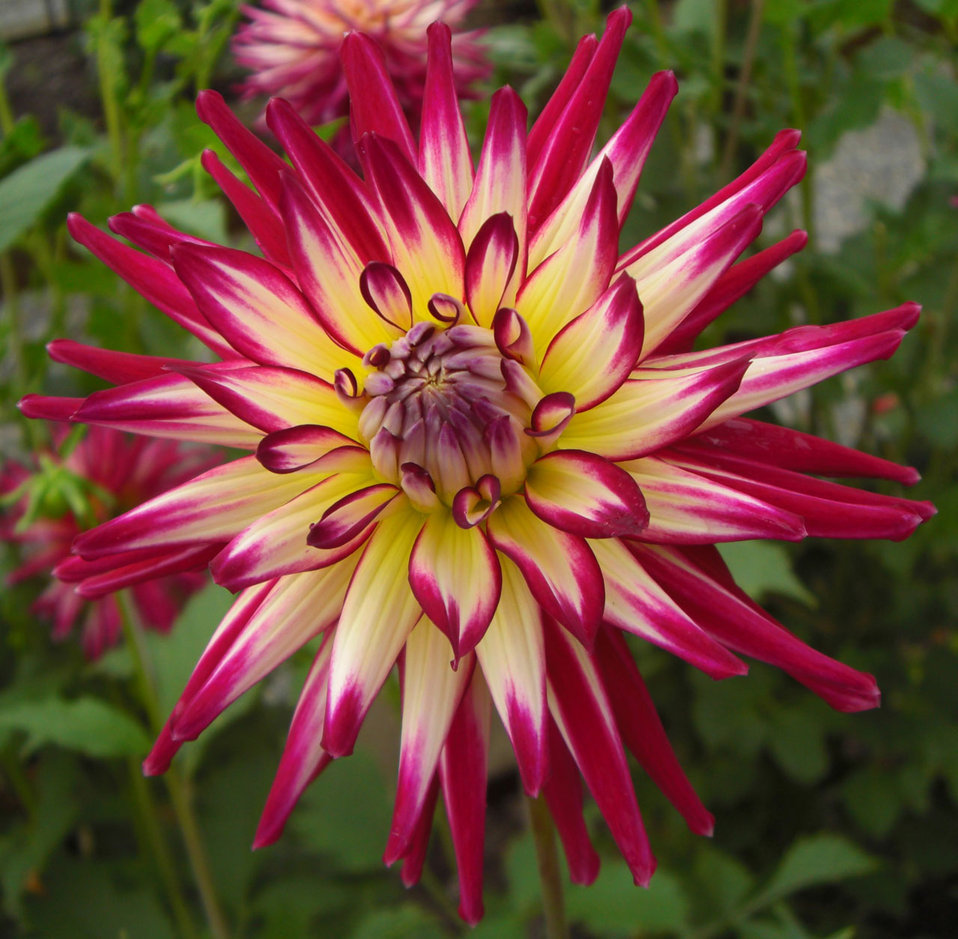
Karras flower in point defiance, tacoma..